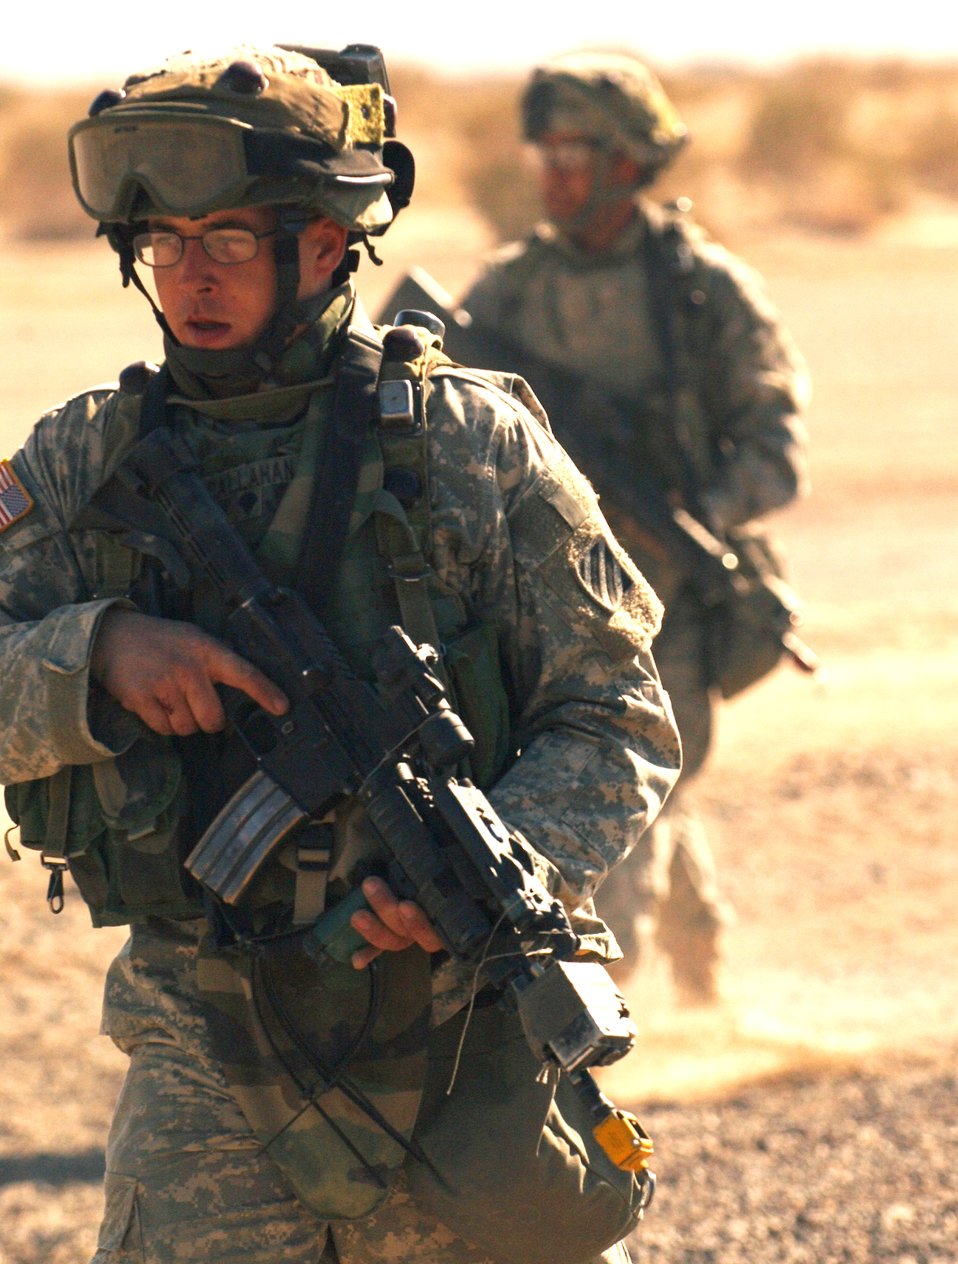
Airmen, Soldiers prepare for Iraq

Soldiers takes part in a route clearance training scenario Jan. 22 at the National Training Center at Fort Irwin, Calif. Soldiers and Airmen are trained in a number of different scenarios that will help better prepare themselves for Iraq. The Soldiers are members of Echo Company, 2-69 Armor Battalion from Fort Benning, Ga.